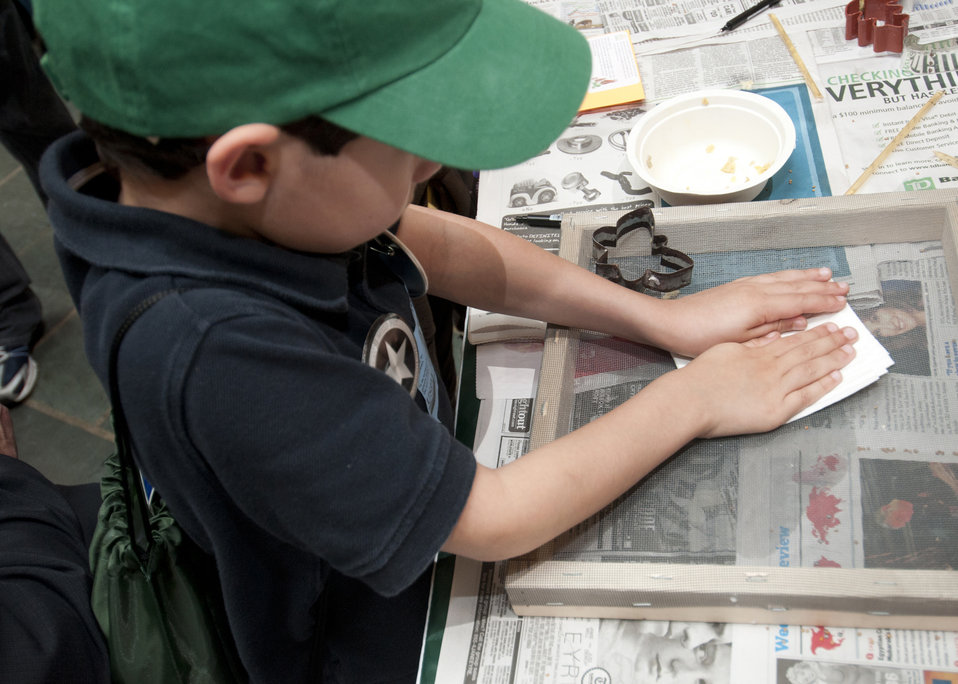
The U. S. Department of Agriculture (USDA) held its annual “Take Your Child to Work Day” on the patio of the Whitten Building, in Washington, DC, on Thursday, Apr. 28, 2011. The program is designed to introduce young people to USDA’s wide range of responsibilities and services. Alejandro Espinosa makes seed cards from recycled paper mixed with water at the People’s Garden exhibit at Agriculture’s “Take Your Child to Work Day” event. The seed card is created using the paper pulp mixture, flower seeds and a cookie cutter and pressed through a screen to remove excess moisture from the card. It takes several hours for the card to dry completely and then the card may be planted in the soil. This was one of many fun and interactive activities for children to learn about green garden practices.